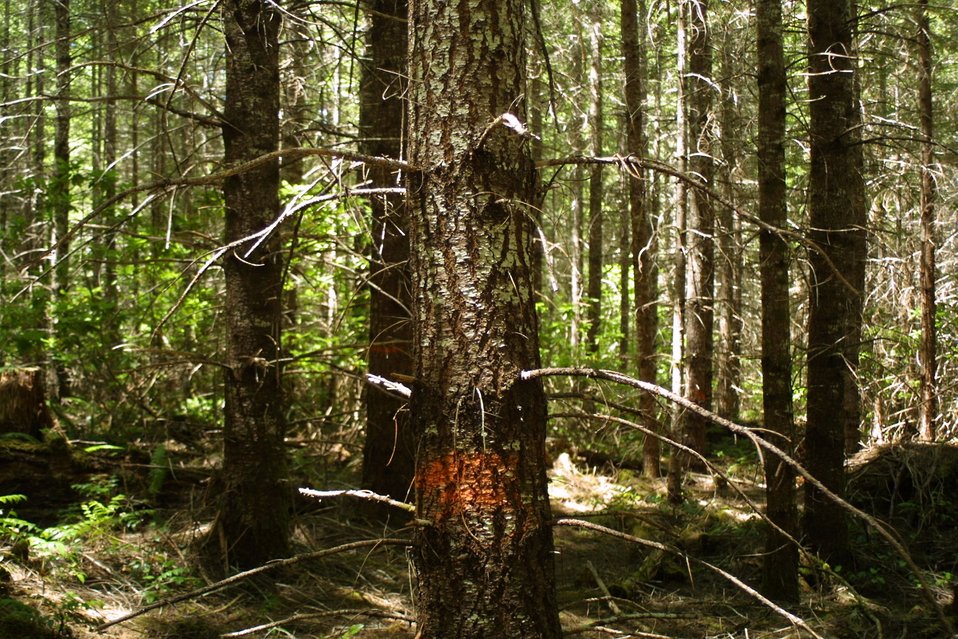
Camas East Timber Sale in Late Successional Reserve.